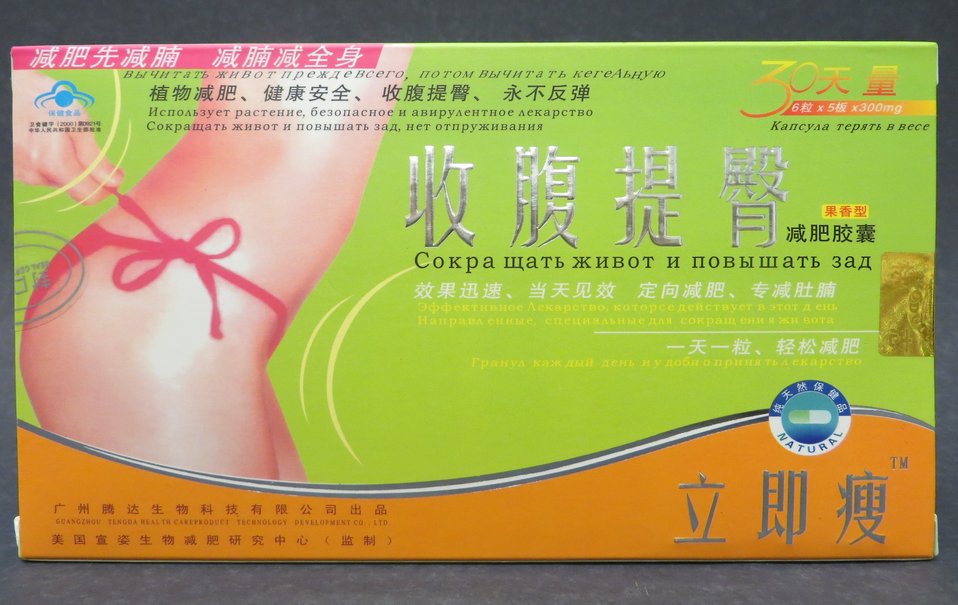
Instant Slim or Shou Fu Ti Tun Guo Xiang Xing Jian Fei Jiao Nang

September 17, 2013 - The FDA is advising consumers not to purchase or use 'Instant Slim,' a product promoted and sold for weight loss. The product was found to contain undeclared sibutramine and phenolphthalein. For more information, go to www.fda.gov/drugs/resourcesforyou/consumers/buyingusingme...

And read this Consumer Update: Beware of Fraudulent ‘Dietary Supplements’